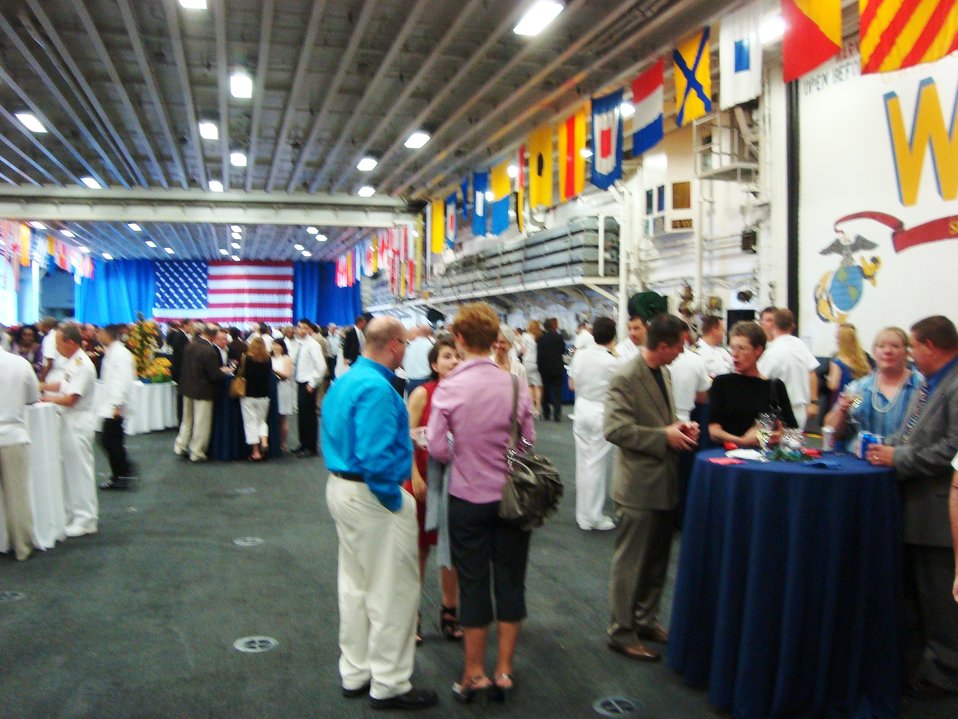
2010 0706 Ottawa USS Wasp event 1